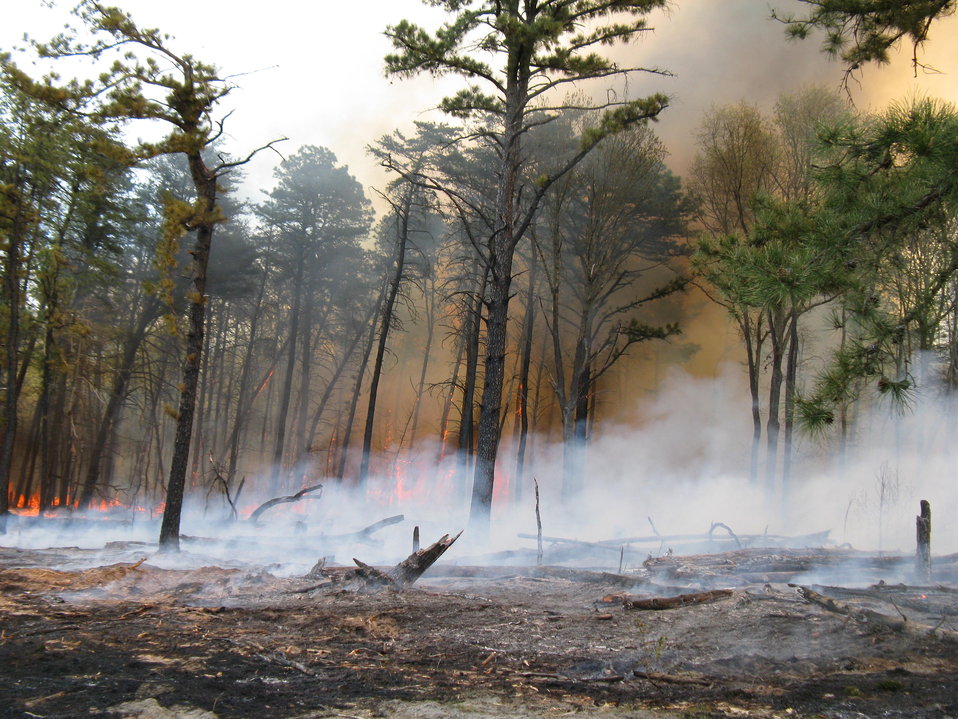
Understory Burn

Laurel, Maryland, April 5, 2012: Fire consumes small Virginia pines in the understory to create open conditions under a mature oak/pine forest. The burn was done at Patuxent Research Refuge's Savannah Restoration Unit to increase refuge species and habitat diversity. Specifically, the refuge hoped to increase density and diversity of rare darkling beetles and forest floor plants.